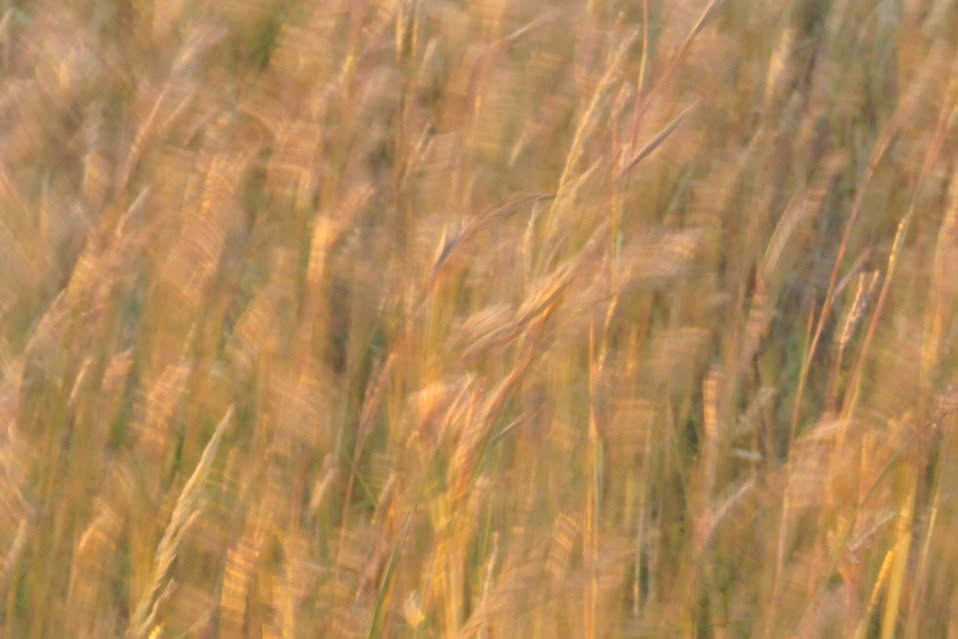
Big bluestem waving in the wind on Lacreek National Wildlife Refuge in South Dakota.